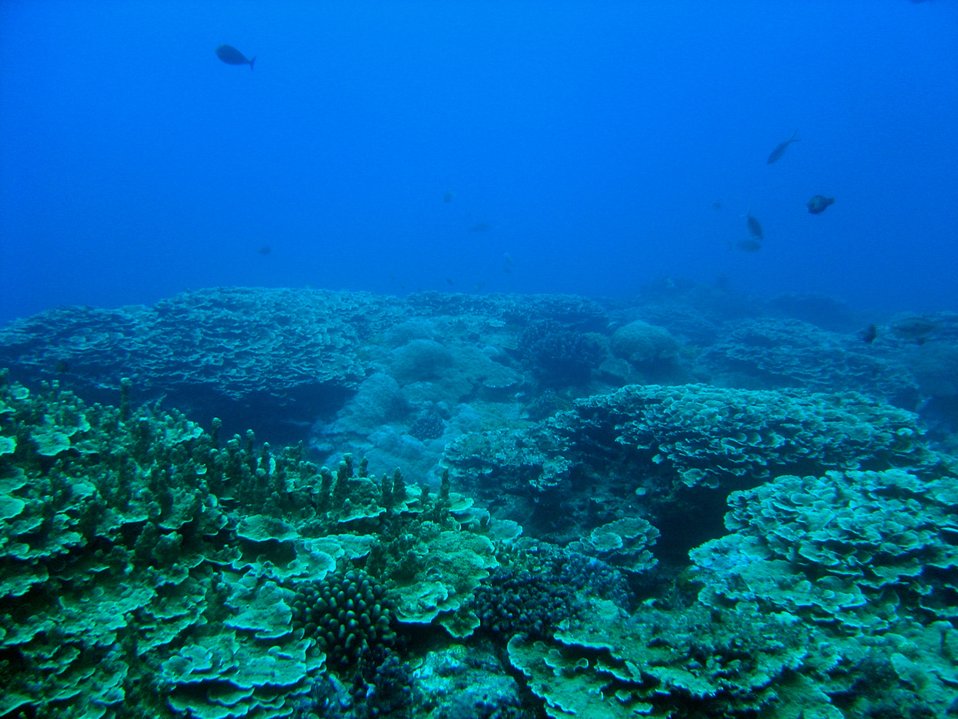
Reef scene